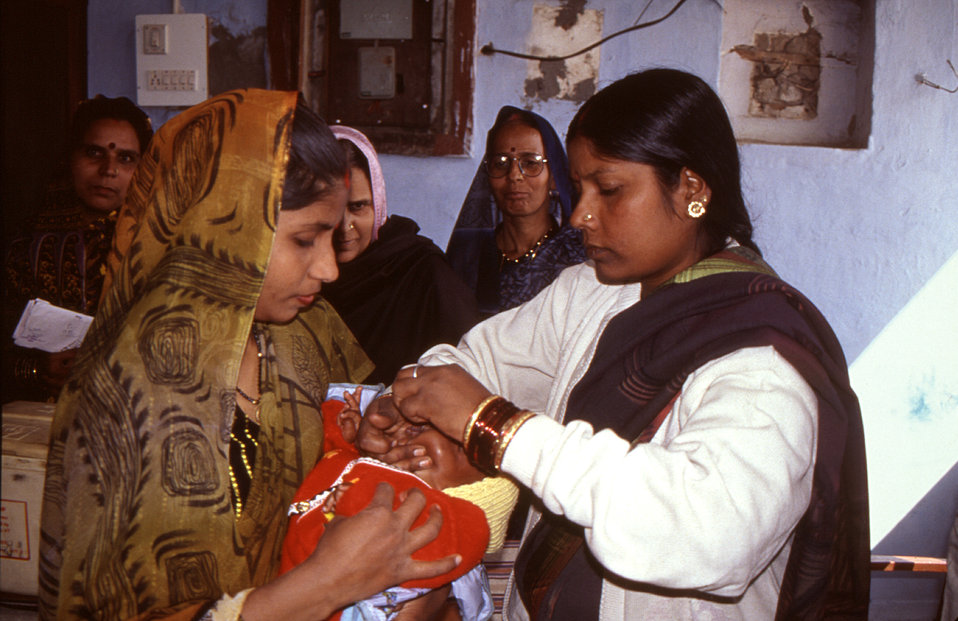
This photograph, taken in 2000, was provided by Chris Zahniser, B.S.N., R.N., M.P.H., a STOP Transmission of Polio (STOP) immunization initiative team member and photographer. Ms. Zahniser was at the time assigned to the state of Uttar Pradesh in northern India, and spent three months working in the Districts of Gorakhpur and Deoria. Here we see an Indian health care provider as she was administering an oral polio vaccine to a new baby, while the child was being cradled by its mother.